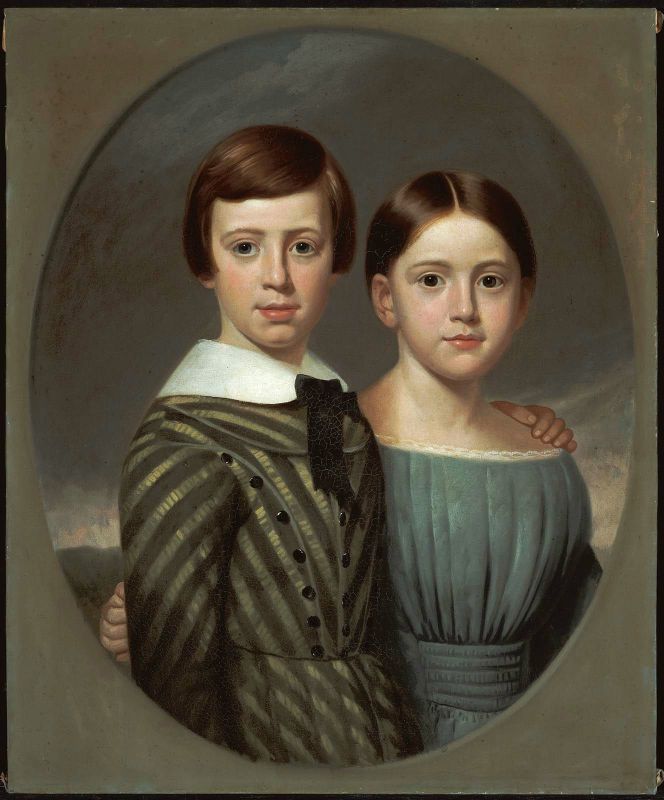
1844 JohnOscarKent SarahElizaKent bySLGerry MFABoston